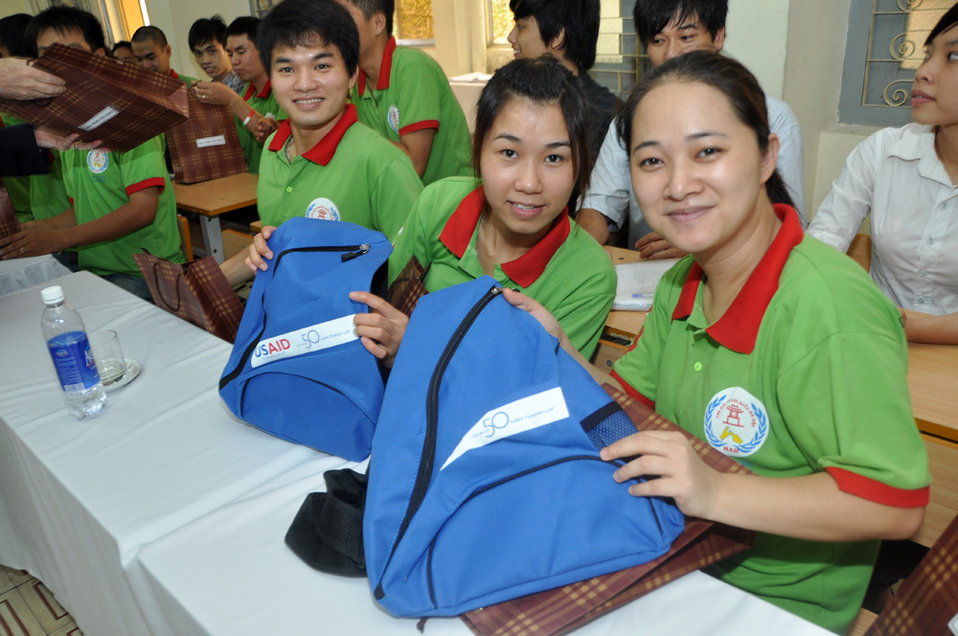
Hearing Impaired Student Graduation in Hanoi, with USAID 50th anniversary bags